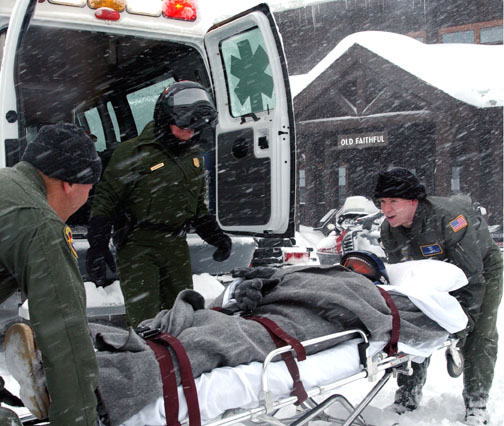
Winterops 03

YELLOWSTONE NATIONAL PARK -- Ranger Jan Cauthorn-Page watches as Senior Master Sgt. Johnny Cupp (left) and Senior Airman Nathan Steele practice moving a patient front of the Old Faithful ranger station here. Cupp and Steele are both emergency medical technicians with the 445th Aeromedical Staging Squadron, Wright-Patterson Air Force Base, Ohio, participating in a medical exercise called Winterops 2003.